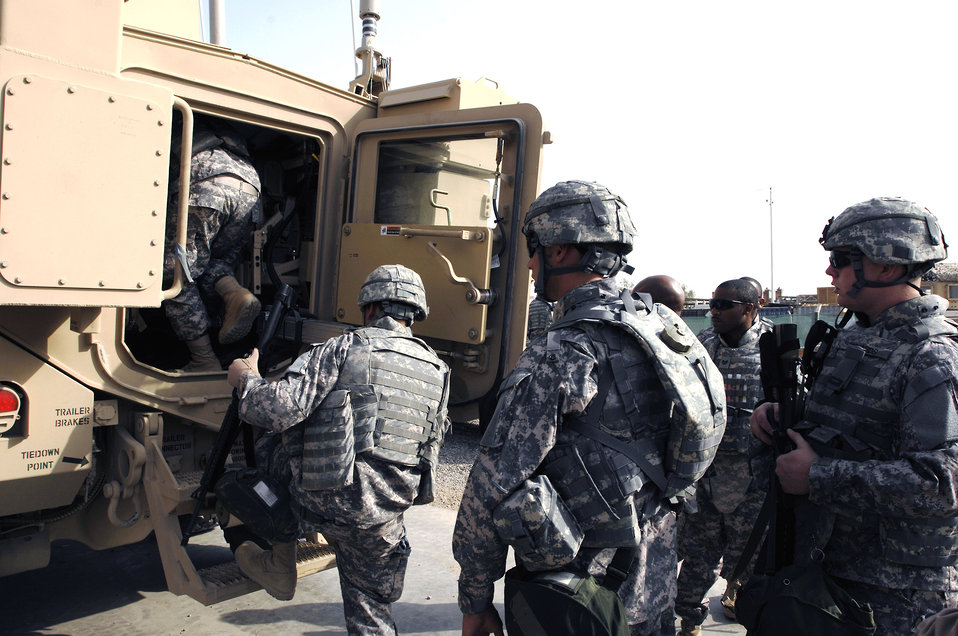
Protected outside the wire

Airmen climb into a mine-resistant ambush-protected vehicle at Joint Base Balad, Iraq, before going outside the wire to a forward operating base in a convoy. The vehicles have saved countless lives.